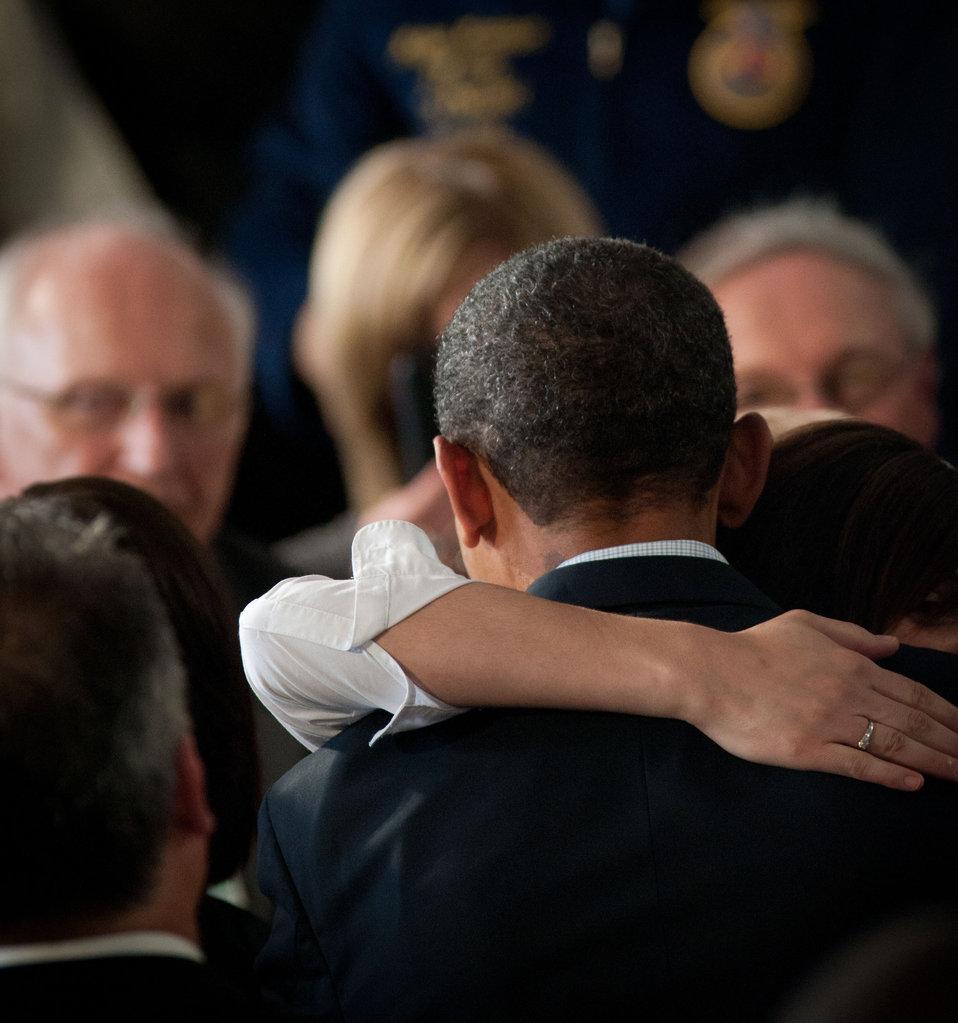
President Barack Obama receives a hug from the audience at the Northeast Iowa Community College, for a White House Rural Economic Forum on Tuesday, August 16, 2011. The President’s visit will focus on agriculture’s contribution to the national economy, and how to create more jobs in rural America.